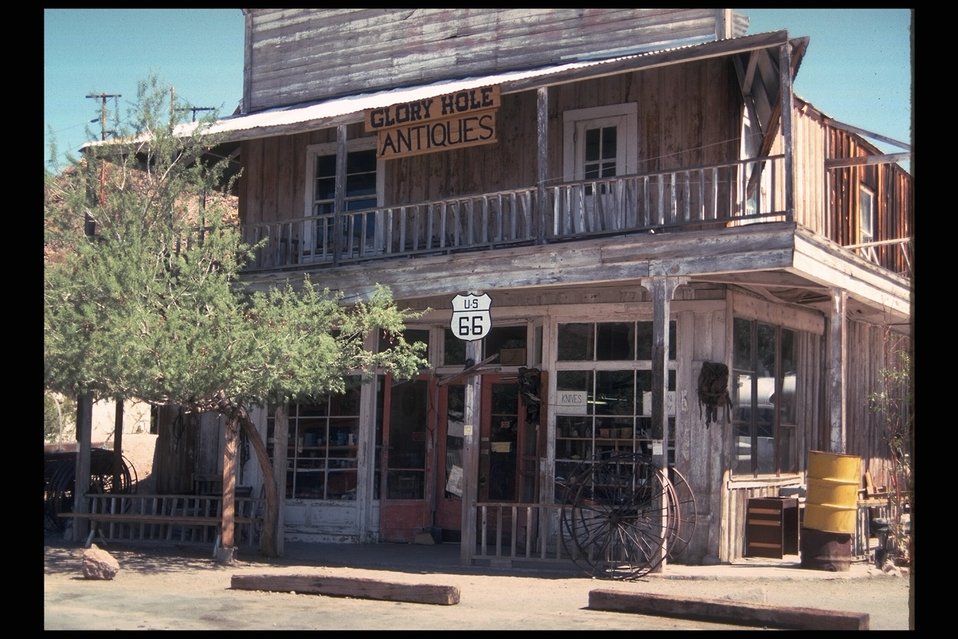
An old antique store with a route 66 sign in Arizona.